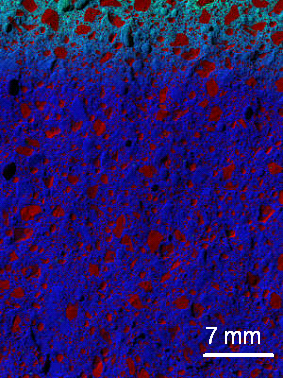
Nanomaterials; Concrete

The barely visible blue-green area at the top of this X-ray image of concrete with the NIST nanoadditive shows that very few chloride ions (in green) penetrate into the concrete.